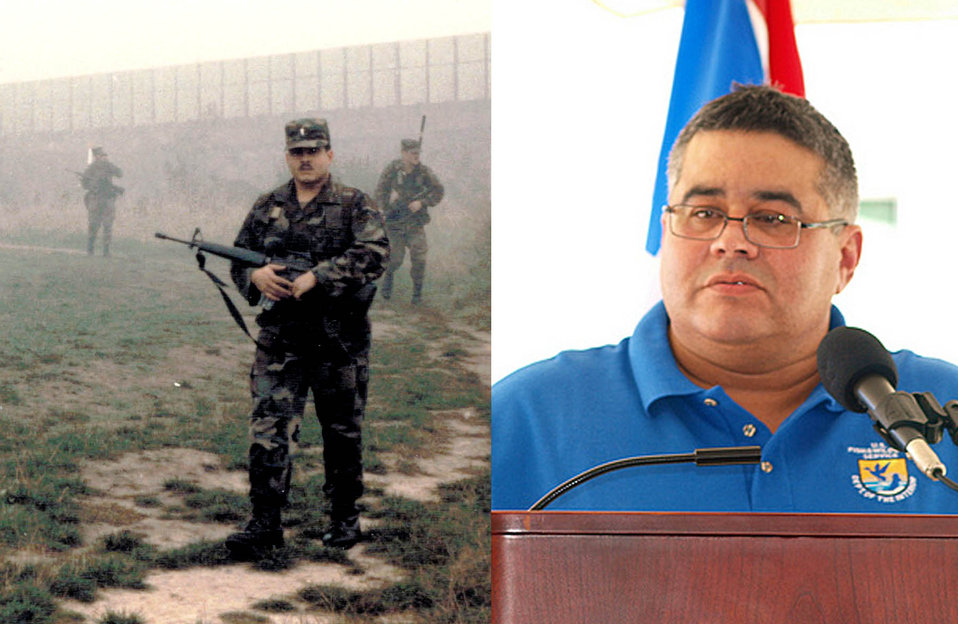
Edwin Muniz

Edwin E. Muñiz .
.
Edwin Muñiz entered military active duty in January 1984 after completing ROTC and getting Commissioned as an Officer in the U.S. Army, serving as a specialist in the Chemical Corps as a Chemical and Nuclear Warfare and Chemical Munitions. He also served in Armor and Artillery units. During his military career he was assigned to Army units in Germany; Ft McClellan, AL; Ft. Bragg, NC; and Aberdeen Proving Grounds, MD. Among his assignments, he had a combat tour with the XVIII Airborne Corps during Operation Desert Storm; an assignment to an Armor Battalion that patrolled the old East and West German Border during the Cold War; performed special assignments at Johnston Atoll while Johnston Atoll was under the control of the Defense Nuclear Agency, and participated in Operation Steel Box, the combined U.S. Army and U.S. Navy mission to relocate the United States Chemical Munitions Stockpile from Germany to Johnston Island. .
.
Before assuming his current duties as Field Supervisor for the Caribbean Ecological Services Field Office in March of 2004, he served as a Project Manager with the Environmental and Monitoring Division of the U.S. Army Chemical Demilitarization Agency at Aberdeen Proving Grounds, MD, and served as the Chief of the Antilles Regulatory Section with the U.S. Army Corps of Engineers in San Juan, PR